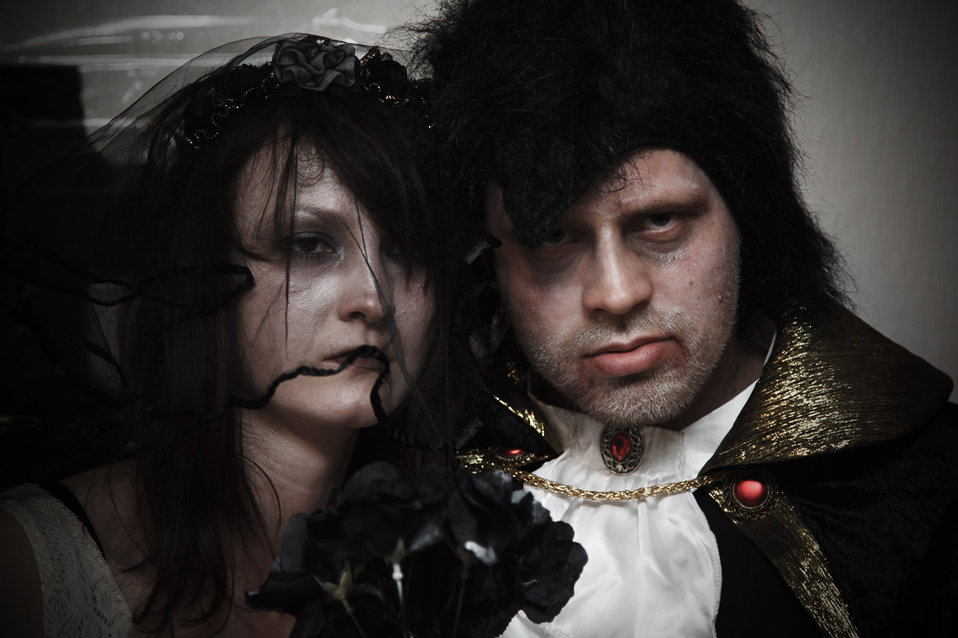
Halloween wedding

Corpse bride and bloody vampire wedding photo.